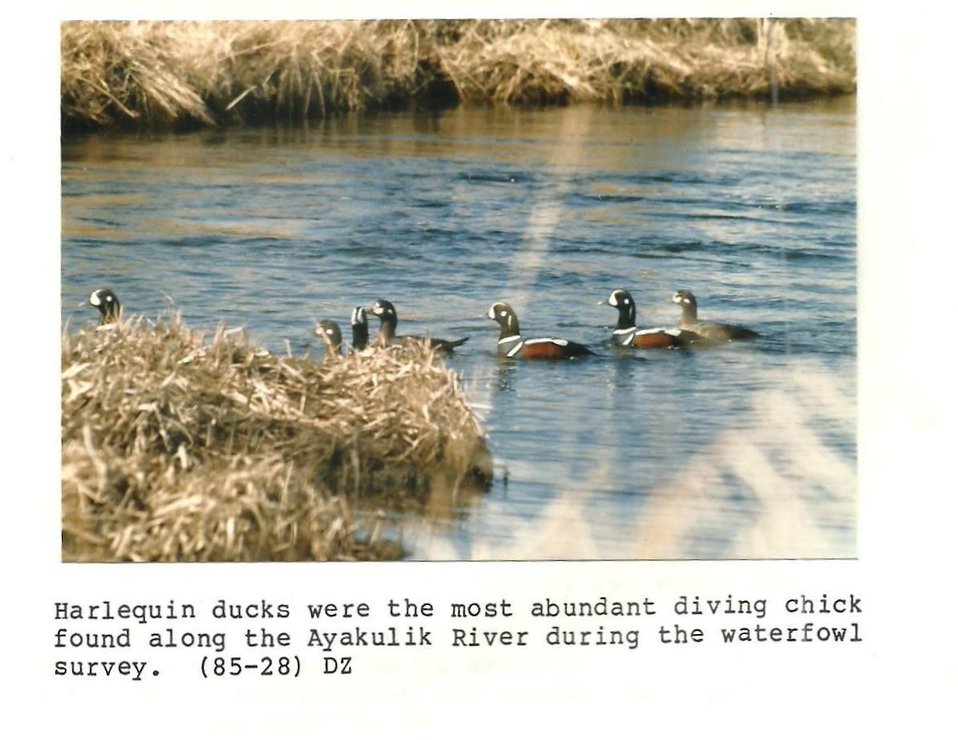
(1985) Harlequin Ducks

Credit: USFWS

Source and Contact: Kodiak National Wildlife Refuge